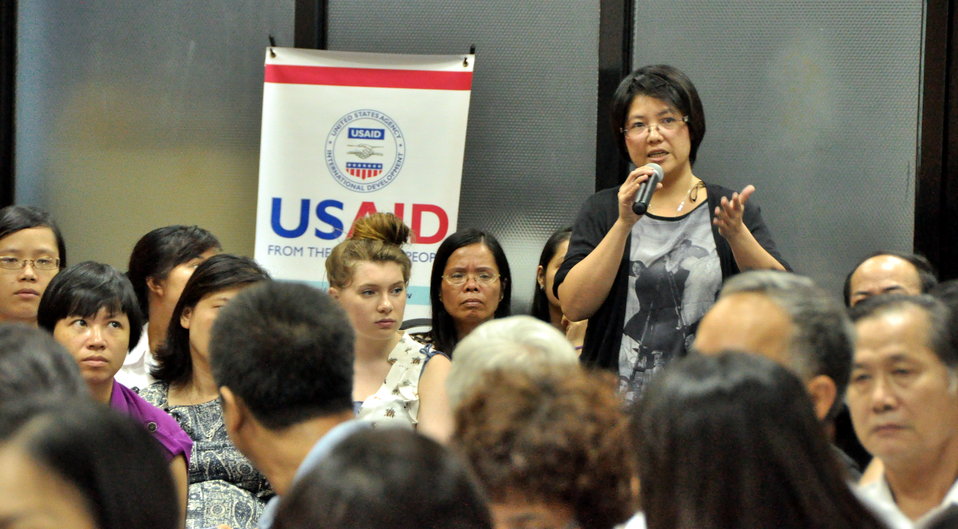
Development Grants Program Workshop in Hanoi

July 24, 2013